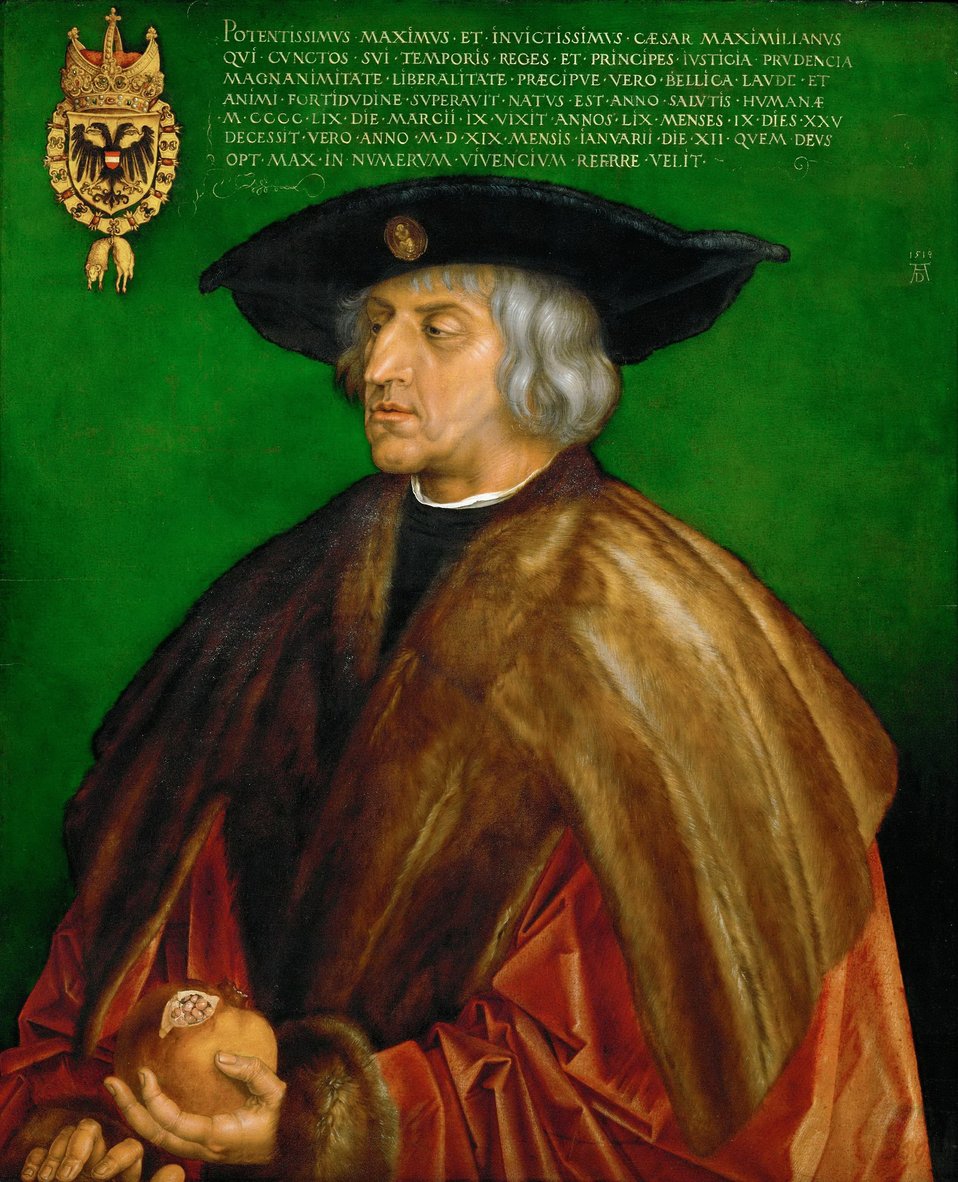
Albrecht Dürer - Emperor Maximilian I